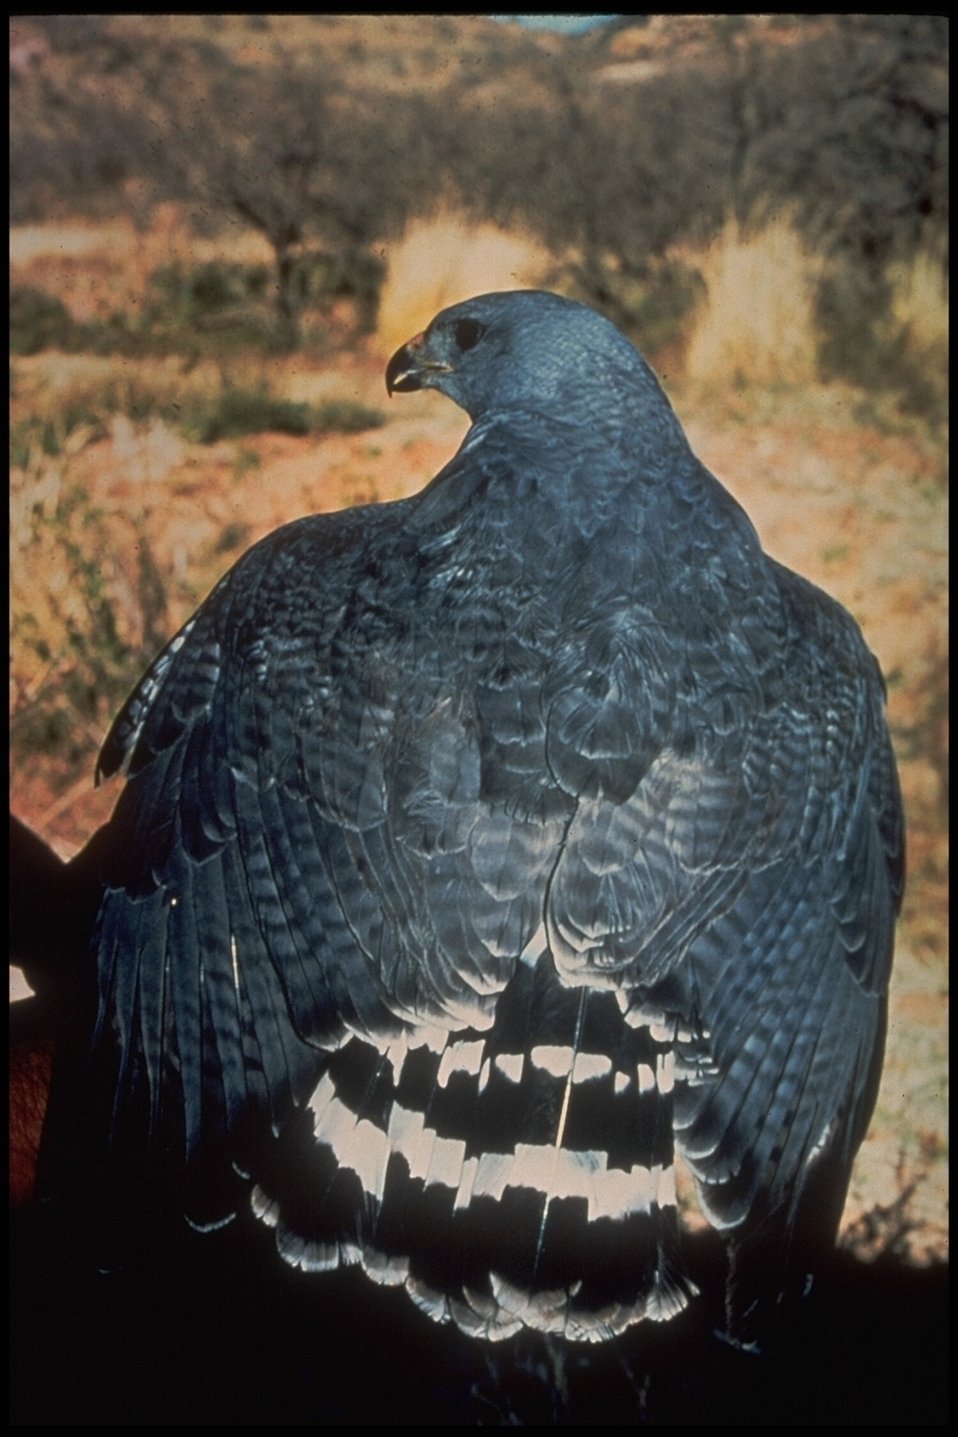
Another beautiful member of the flying wildlife on BLM's lands in Arizona